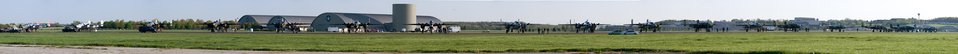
17-ship B-25 Mass Arrival

Multiple photos taken within one minute were merged to form a virtual panorama of the 17 B-25 bombers that came from across the nation to the National Museum of the U.S. Air Force at Wright-Patterson Air Force Base, OH on April 17, 2010. The Mitchell bombers will participate in a formation flyover during the Doolittle Raiders' 68th reunion.